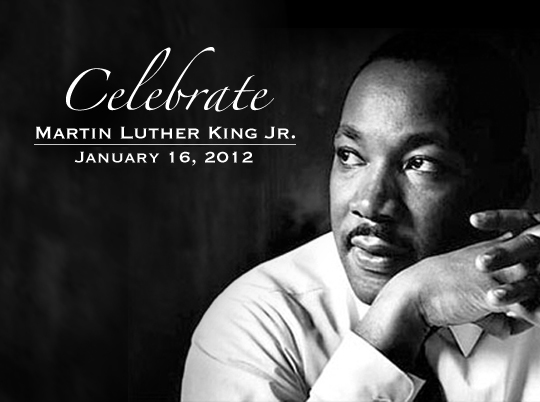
Martin Luther King Jr. Birthday